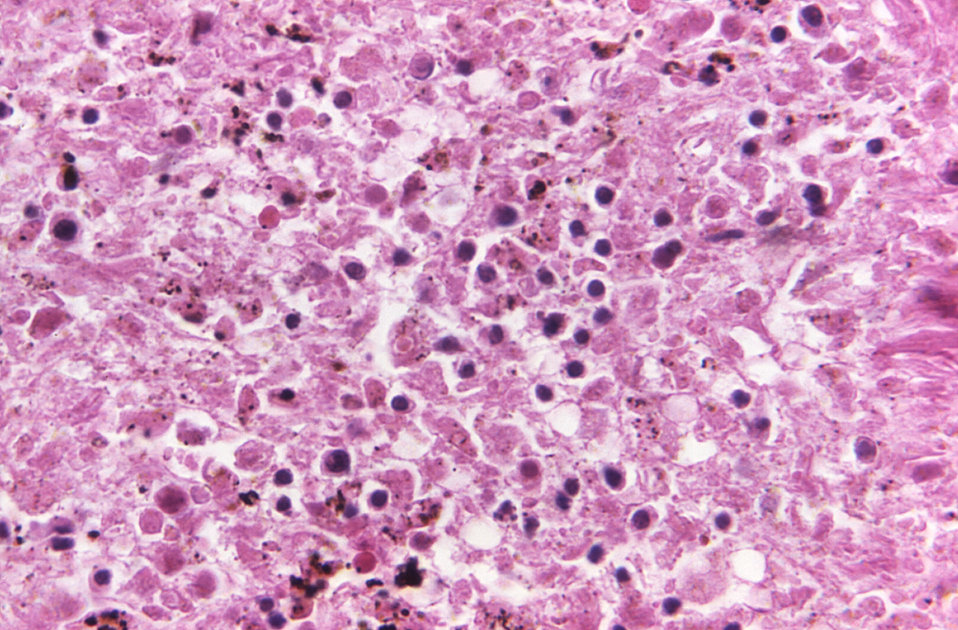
At a magnification of 500X, this hematoxylin and eosin-stained splenic tissue sample revealed the histopathologic changes indicative of what was diagnosed as a case of fatal human plague from the country of Nepal.